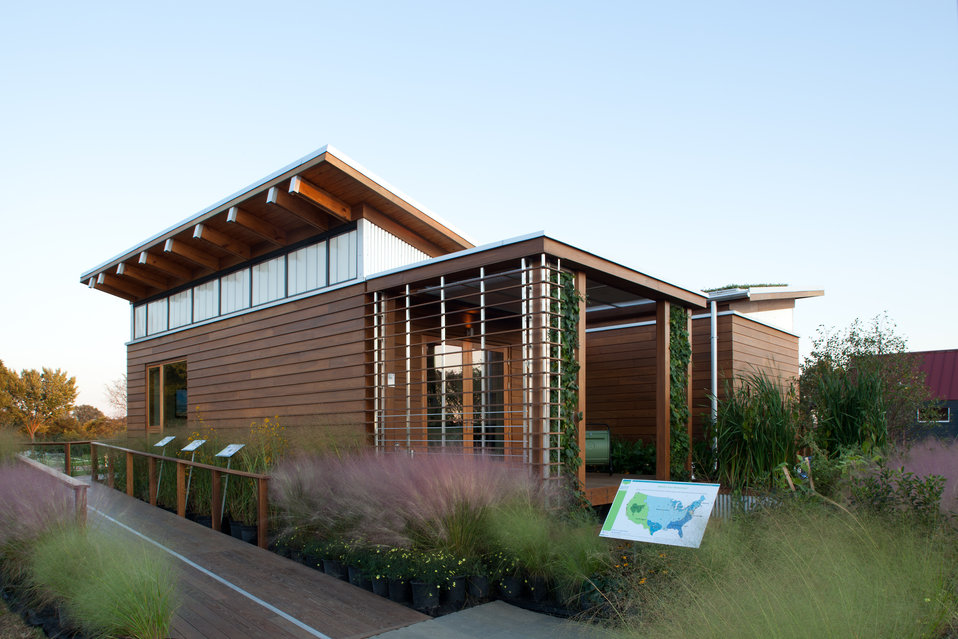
University of Maryland's entry in the U.S. Department of Energy Solar Decathlon 2011, Washington, DC, September 30, 2011. Maryland received the first place overall award. (Credit: Jim Tetro/ U.S. DOE / Solar Decathlon)
The Solar Decathlon is a competition that challenges college and university teams from around the world to design, build, and operate solar-powered houses that are affordable, highly energy efficient, attractive, and easy to live in. The 2011 teams and their houses represented a broad range of design solutions, geographic locations and climate, and were targeted toward urban, suburban and rural settings. The houses were intended for different housing markets, including lower-income, disaster relief, retirement, and single family.